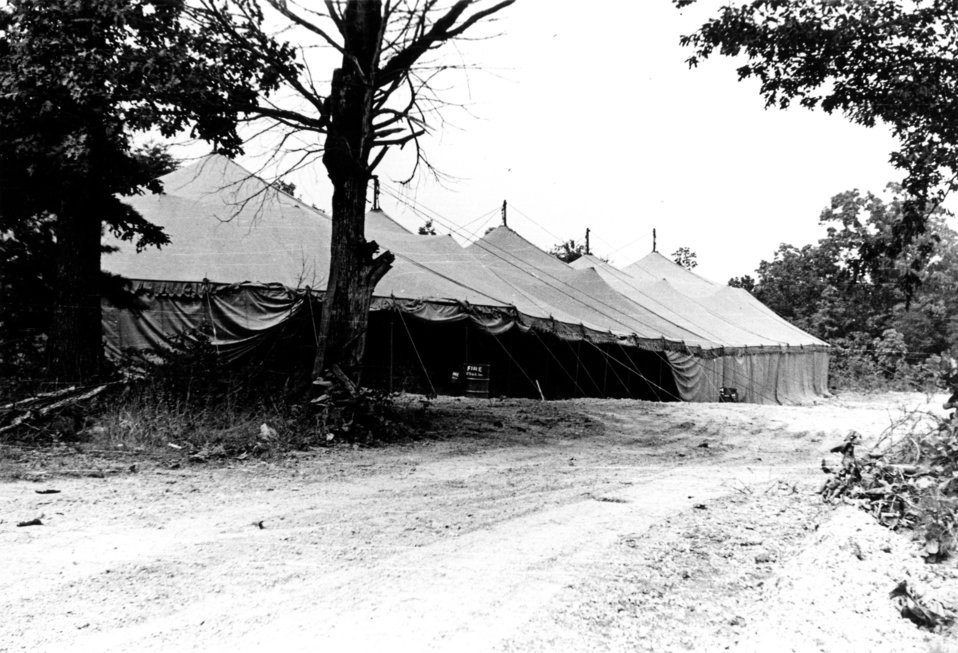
K-25 at Oak Ridge